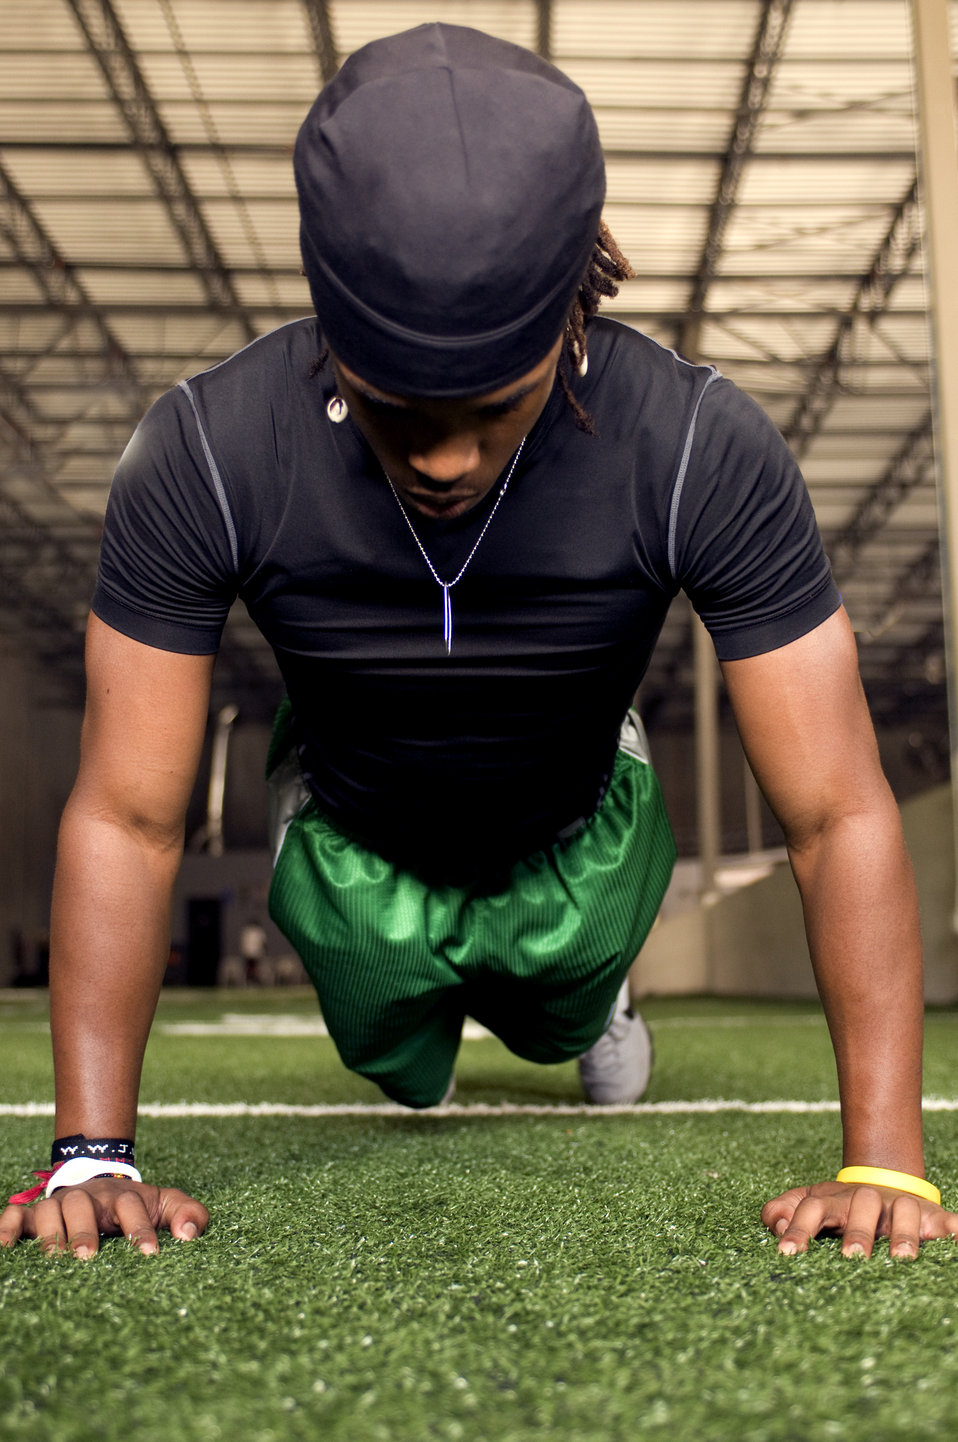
This young man was performing push-ups on an indoor practice field's artificial grass surface. At this point of his activity, he was at the high-point of his push-up exercise, whereupon, his arms were both extended at the elbows, his palms were flush with the ground, and chest was in a straight line with the lower half of his body. Hopefully, he was keeping well hydrated during his exercise regimen by drinking fresh water during his workout.